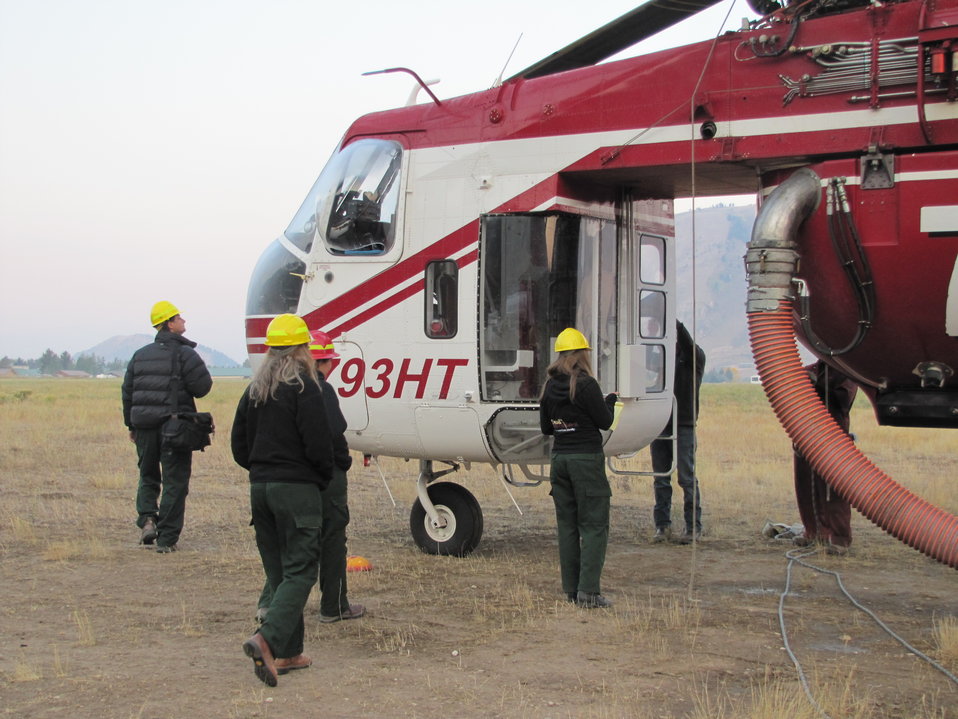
Media Tour

Public Information Officers Dana Howlett and Jenny Anzelmo Sarles lead a tour of a Type I helicopter for a newspaper reporter and photographer.